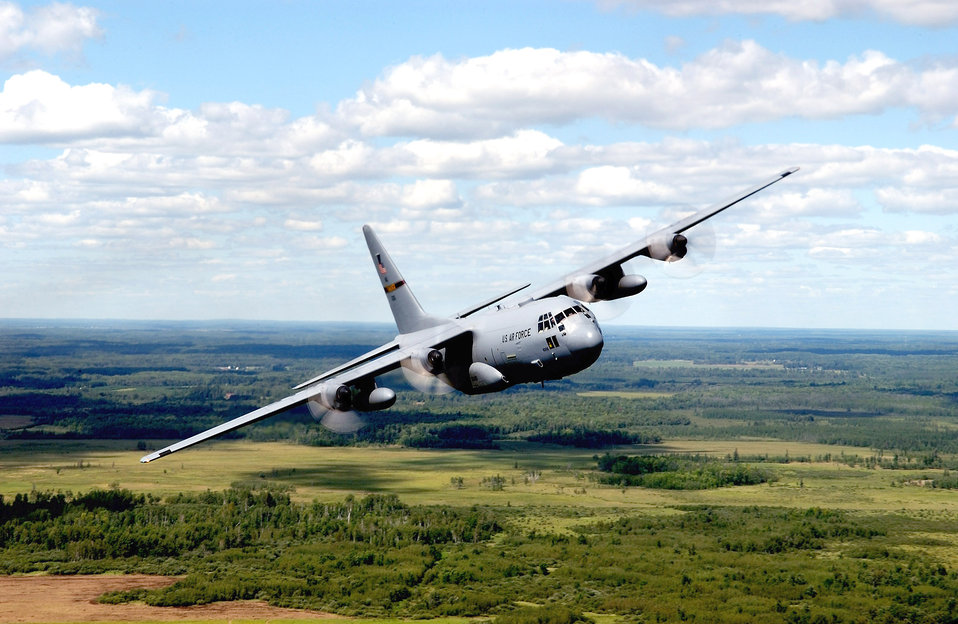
Soaring Hercules

A C-130 Hercules from the Minnesota Air National Guard's 133rd Airlift Wing banks hard over the Mille Lacs Lake area in northern Minnesota during a training mission Aug. 20.